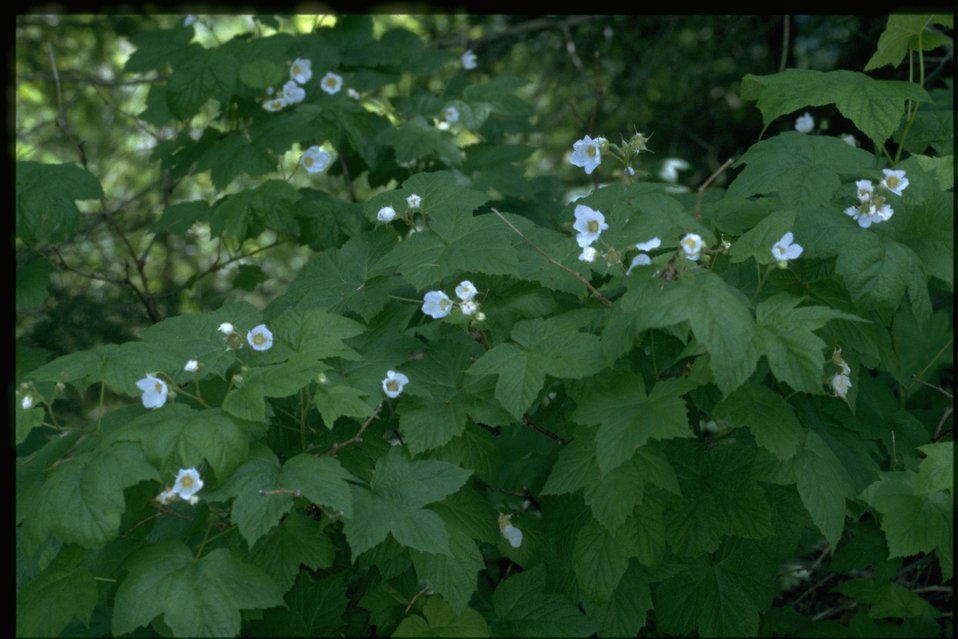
Farshot of Rhododendron macrophyllum.